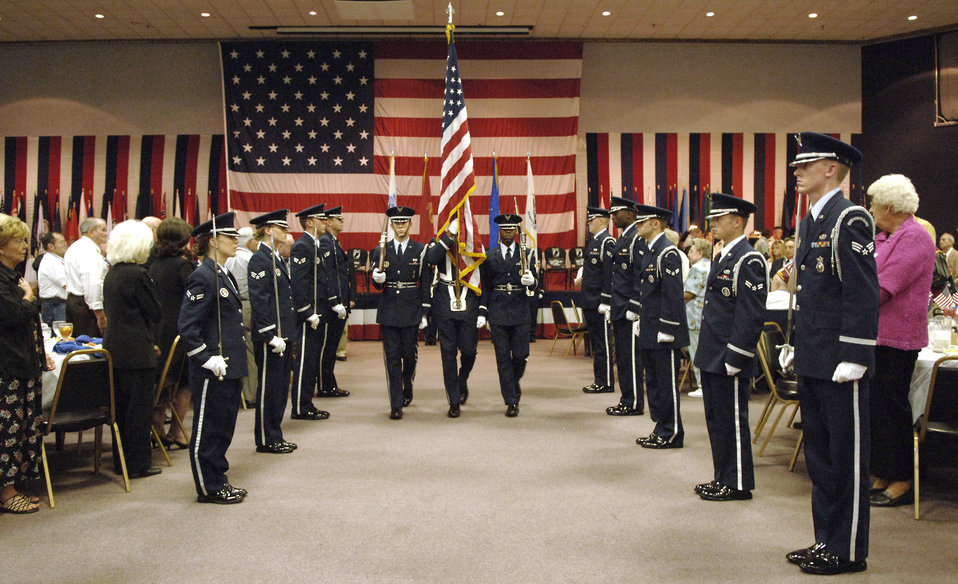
In their honor

The honor guard retires the colors at the 2006 Former POW/Purple Heart Luncheon at Barksdale Air Force Base, La., on Saturday, May 20, 2006. Eighty-two former prisoners of war and 250 Purple Heart recipients attended. The keynote speaker was Lt. Gen. Kevin P. Chilton, 8th Air Force commander.